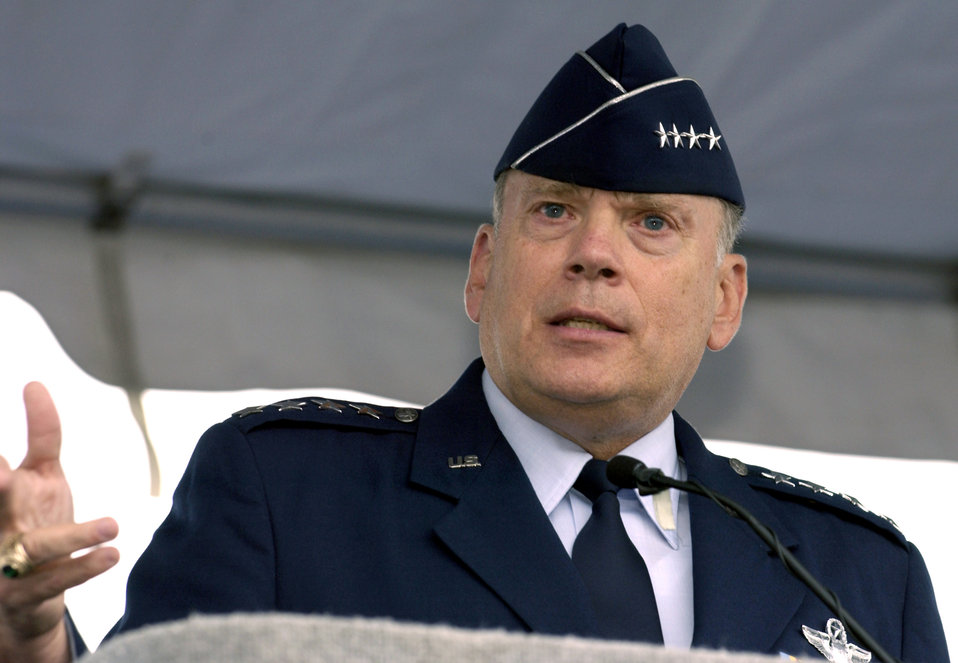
Thirteen years later, Air Force dedicates its memorial

ARLINGTON, Va. -- Air Force Chief of Staff Gen. John P. Jumper addresses hundreds of people gathered for the official groundbreaking and site dedication ceremony on the site of the future national Air Force Memorial on Sept. 15. The 270-foot tall memorial is designed to honor all those who have served in the U.S. Air Force and its predecessor organizations.